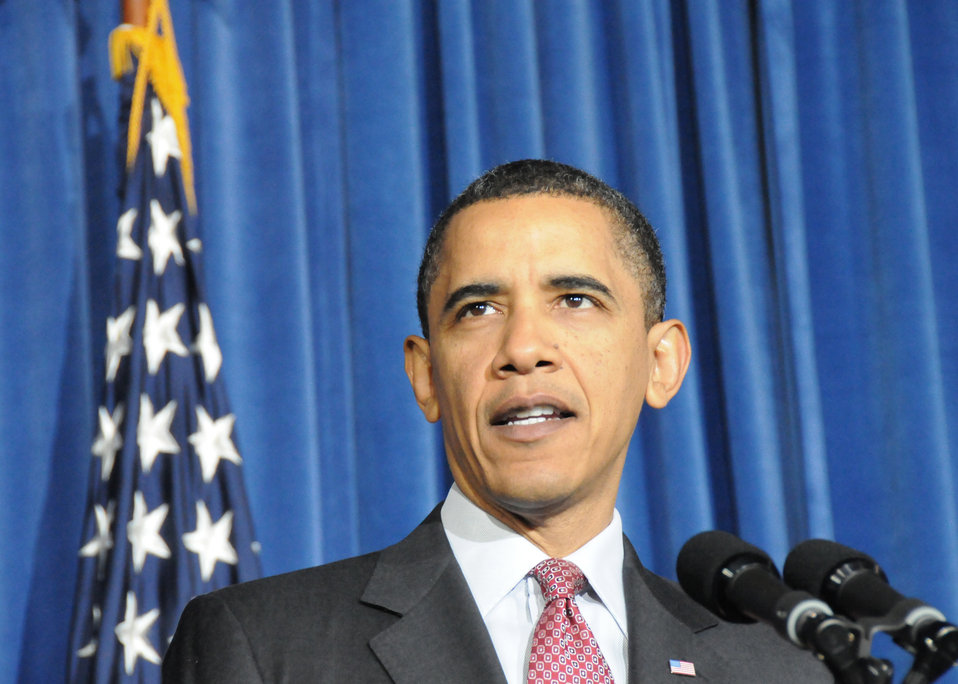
President Barack Obama addresses the challenges, innovations, and opportunities surrounding land conservation and the importance of reconnecting Americans to the outdoors at the opening of the White House Conference on America’s Great Outdoors held at the Department of the Interior on Friday, April 16, 2010. USDA photo 10di1316-179